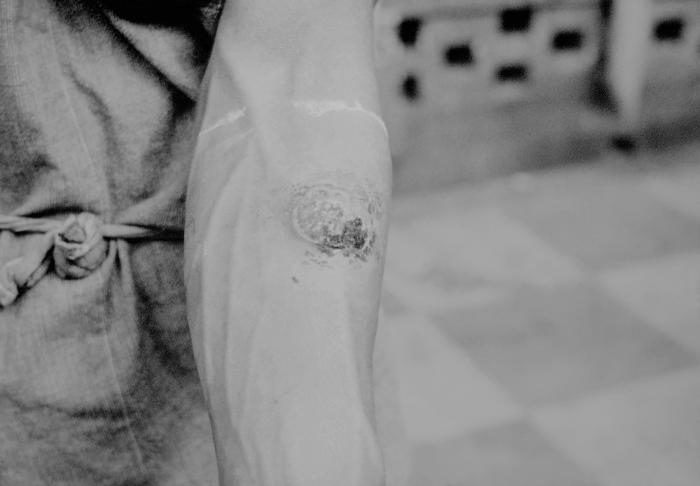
This 1962 photograph depicted a man's extended left arm, the volar surface of which displayed a leishmanial lesion due to his leishmaniasis infection. Leishmaniasis is transmitted by the bite of female phlebotomine sand flies. The sand flies inject the infective stage, promastigotes, during blood meals. Promastigotes that reach the puncture wound are phagocytized by macrophages and transform into amastigotes. Amastigotes multiply in infected cells and affect different tissues, depending in part on the Leishmania species. This originates the clinical manifestations of leishmaniasis. Sand flies become infected during blood meals on an infected host when they ingest macrophages infected with amastigotes. In the sand fly's midgut, the parasites differentiate into promastigotes, which multiply and migrate to the proboscis.